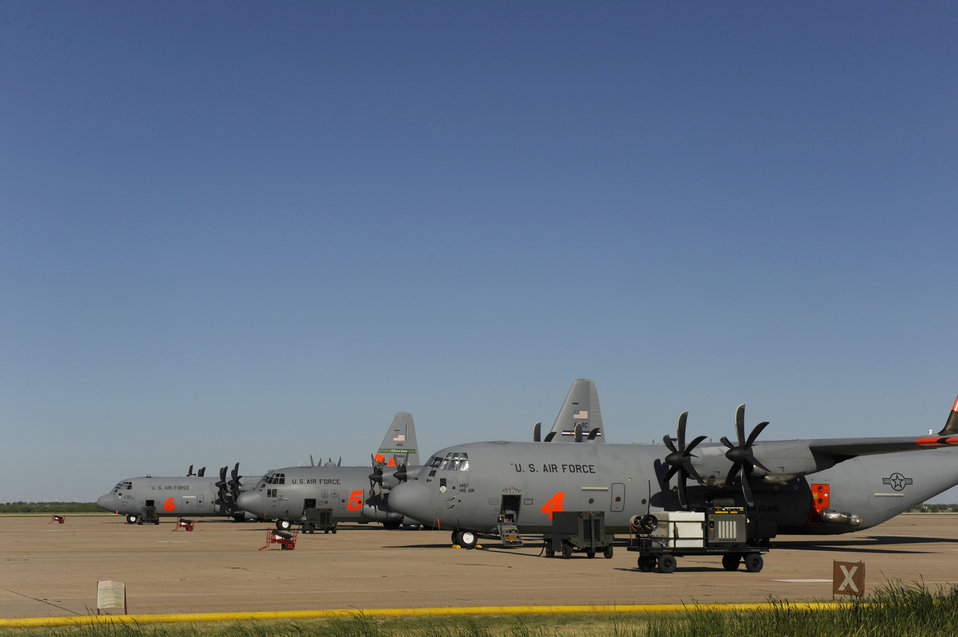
Texas Wildfires

Several C-130 Hercules sit on the flightline April 27, 2011, at Dyess Air Force Base, Texas. These C-130s are equipped with the Modular Airborne Firefighting System, which is used to fight wildfires.